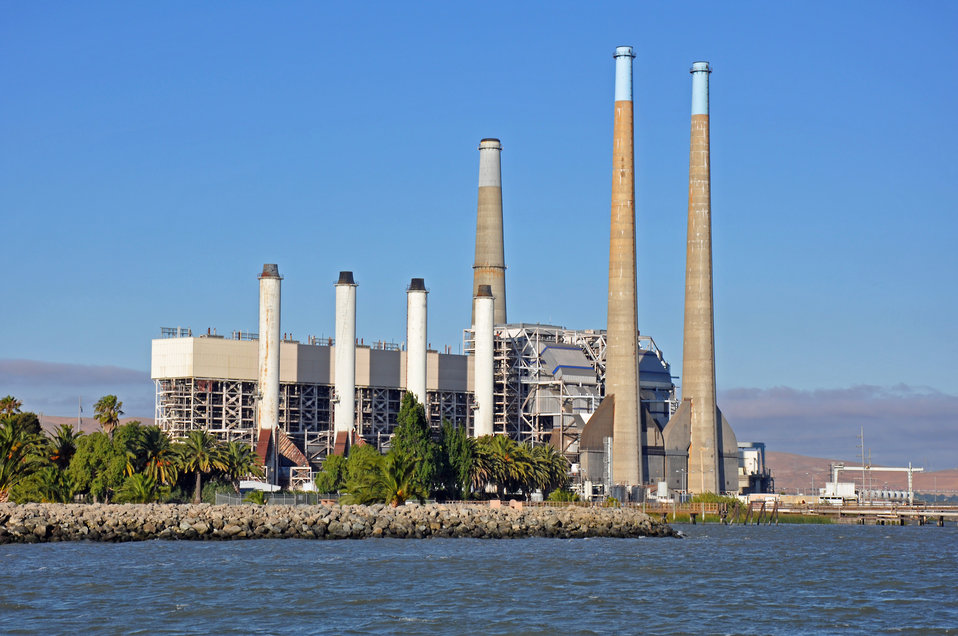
Pittsburg power plant

On the Delta, near Chipps Island.